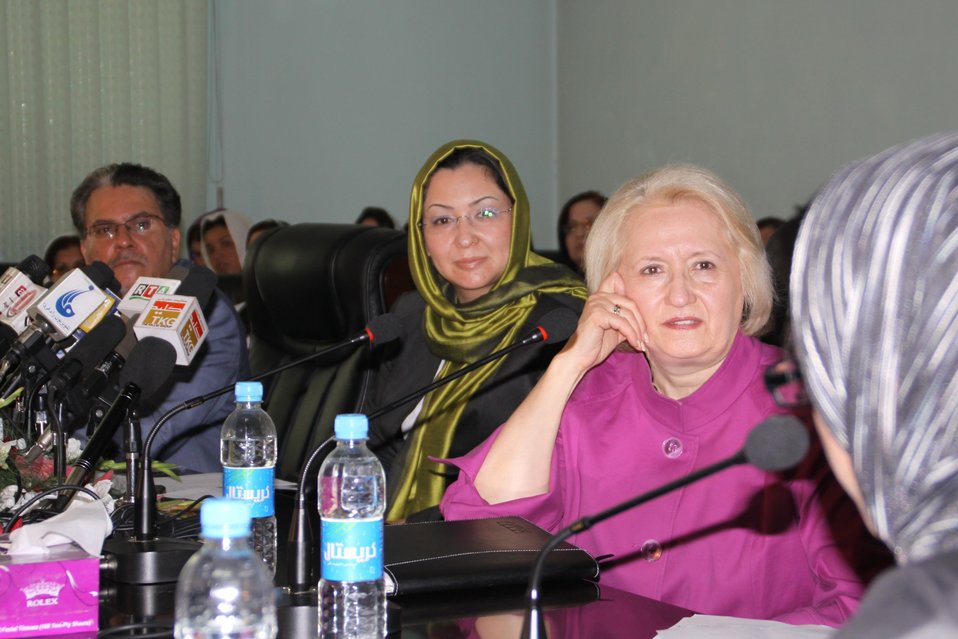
مصر د افغانستان او متحده ایالاتو سره یوځای شو تر څو مورنی مصونیت لا ښه کاندی